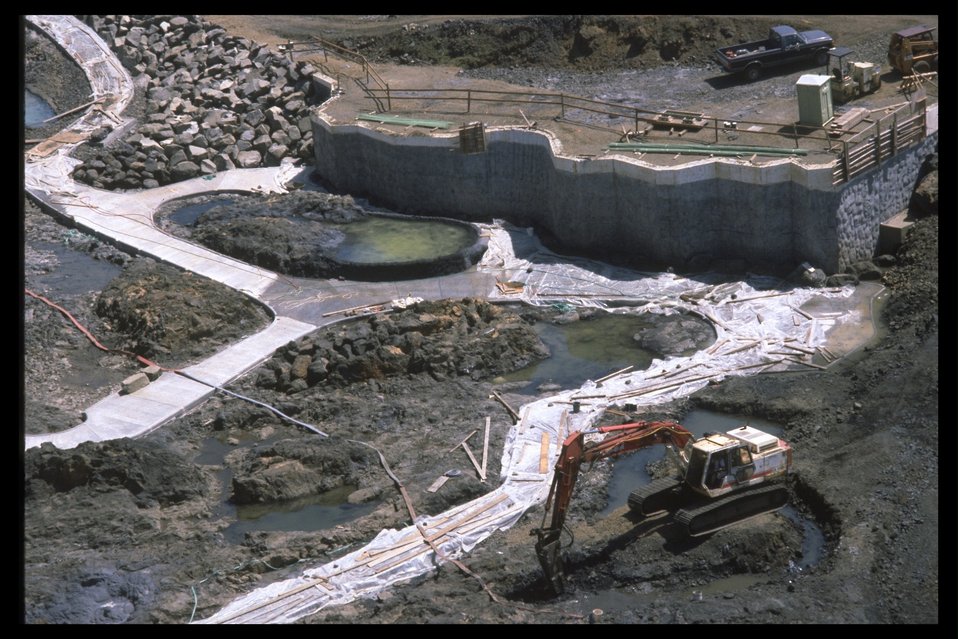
Construction of Quarry Cove tidepools.